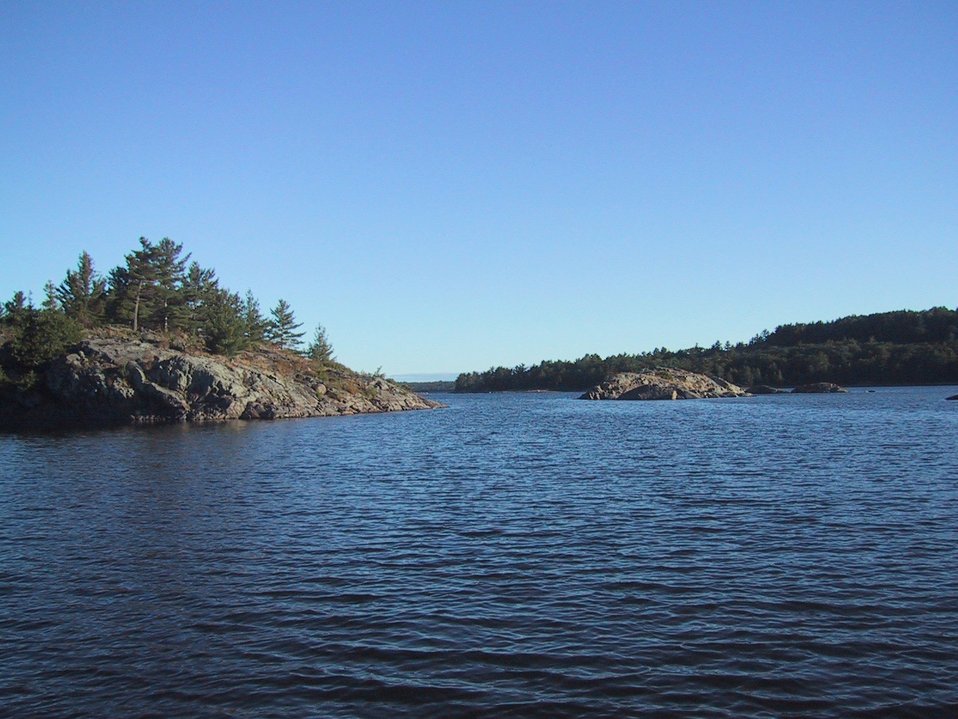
Lake Huron